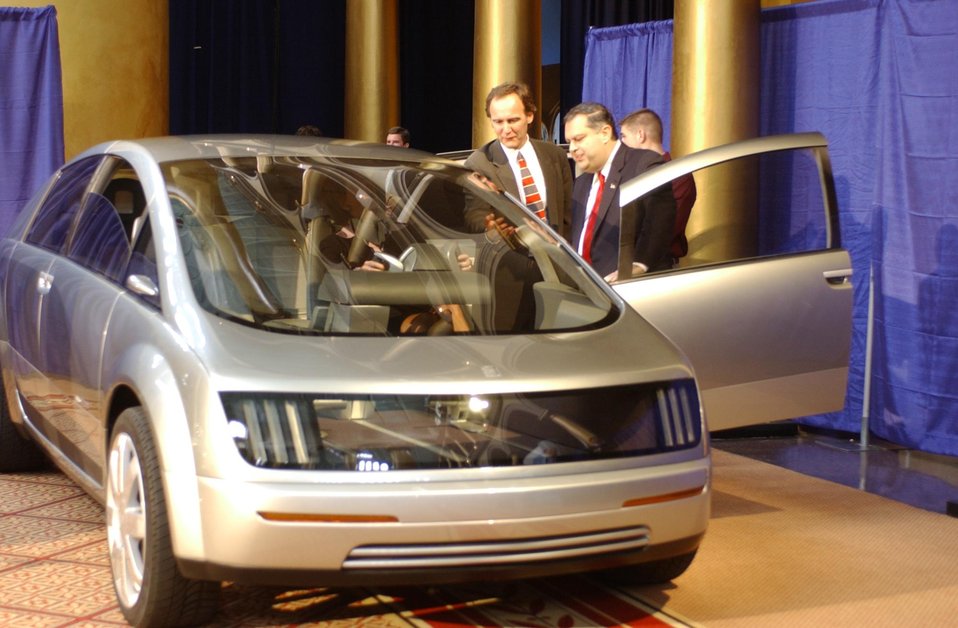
SECRETARY OF ENERGY ABRAHAM EXAMINING A HYDROGEN POWERED VEHICLE AT THE CLEAN AIR FOR THE 21ST CENTURY EXHIBIT.

THIS VEHICLE, GM'S HY-WIRE WAS FEATURED AT THE CLEAN AIR FOR THE 21ST CENTURY EXHIBIT ON FEBRUARY 6, 2003 AT THE NATIONAL BUILDING MUSEUM IN WASHINGTON, DC. GM'S HY-WIRE IS A COMBINATION OF HYDROGEN PROPULSION AND DRIVE-BY-WIRE CONTROLS. VEHICLES THAT RUN ON HYDROGEN FUEL PRODUCE ONLY WATER, NOT EXHAUST FUMES, THEREBY REDUCING POLLUTION AND RELIANCE ON FUEL FROM OTHER COUNTRIES.